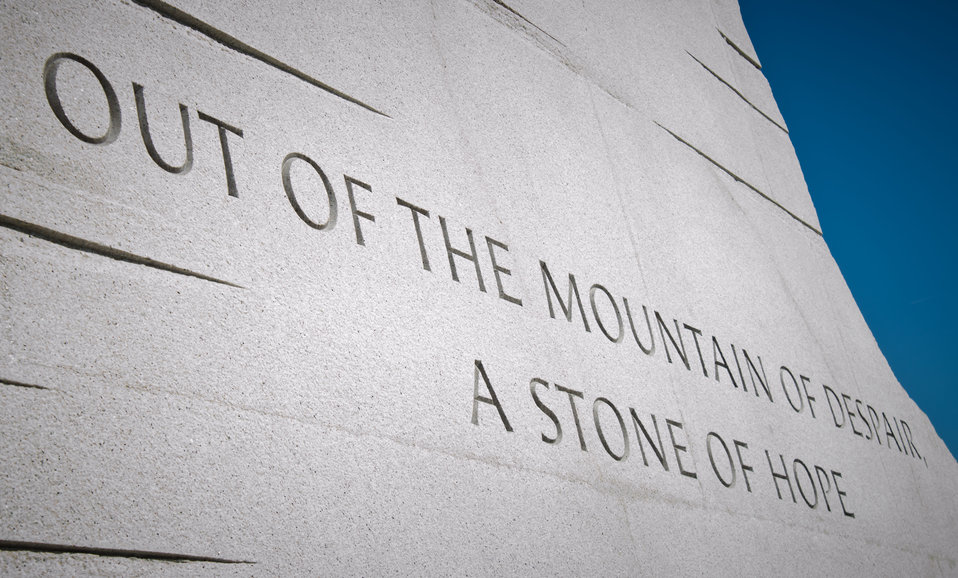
Martin Luther King, Jr. Memorial in Washington, DC, on Saturday, October 8, 2011.